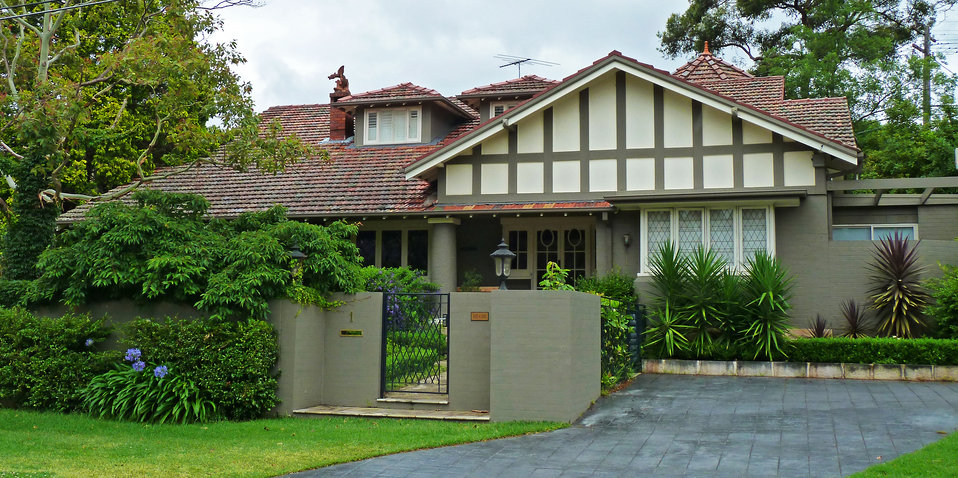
1 Northcote Road, Lindfield, New South Wales, Australia.